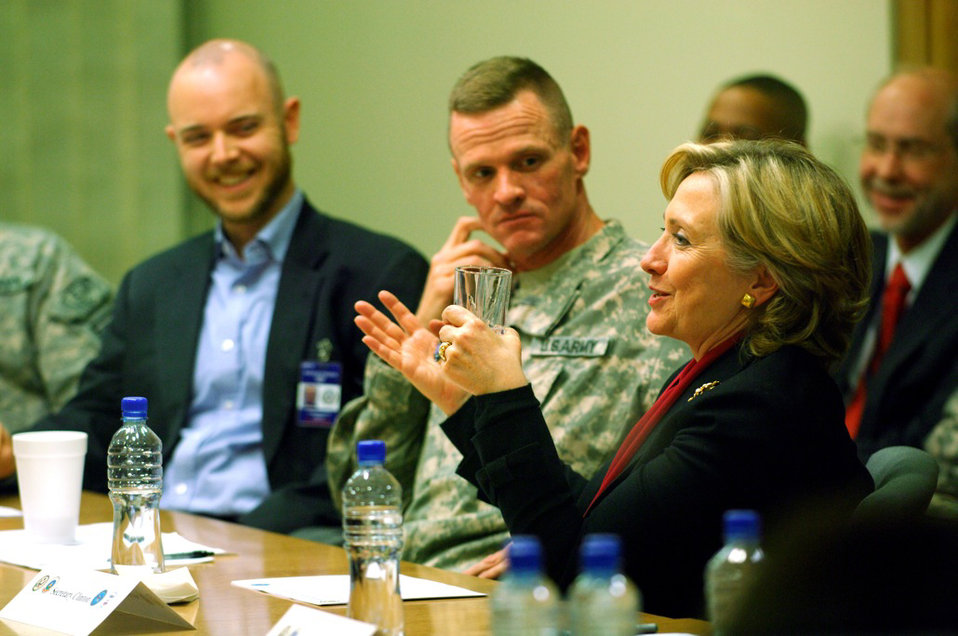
Secretary Clinton Travels to Afghanistan

U.S. Secretary of State Hillary Rodham Clinton during a meeting at the U.S. Embassy in Kabul, Afghanistan November 19, 2009. Secretary Clinton traveled to Afghanistan to attend President Hamid Karzai's November 19, 2009 inauguration ceremony, meet with Afghanistan's leadership, international partners and allies, U.S. troops, staff in Provincial Reconstruction Teams, and Embassy staff.